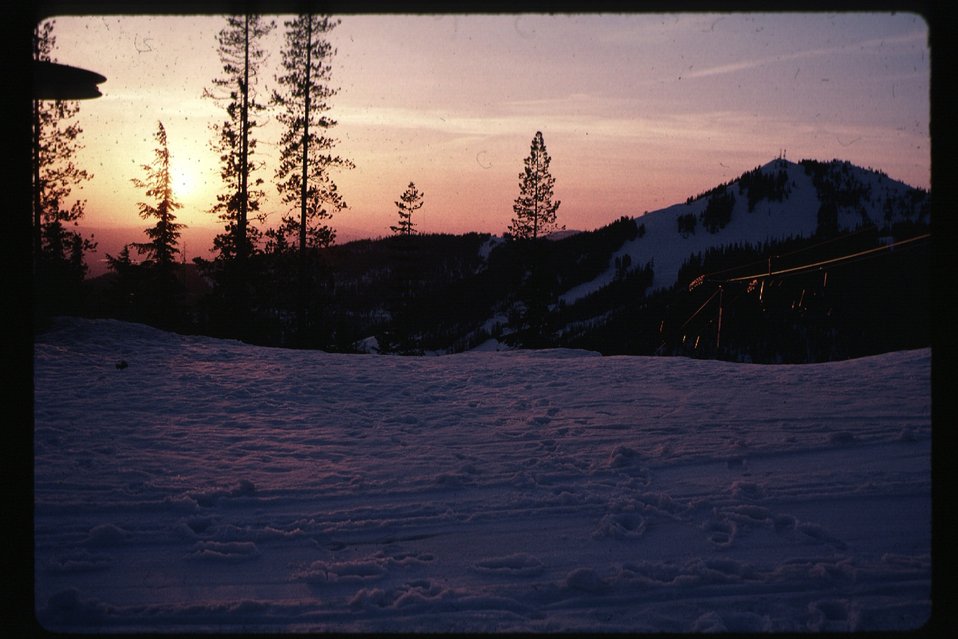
Snow in winter Couer d'Alene Field Office UCSC Upper Columbia Salmon Clearwater District